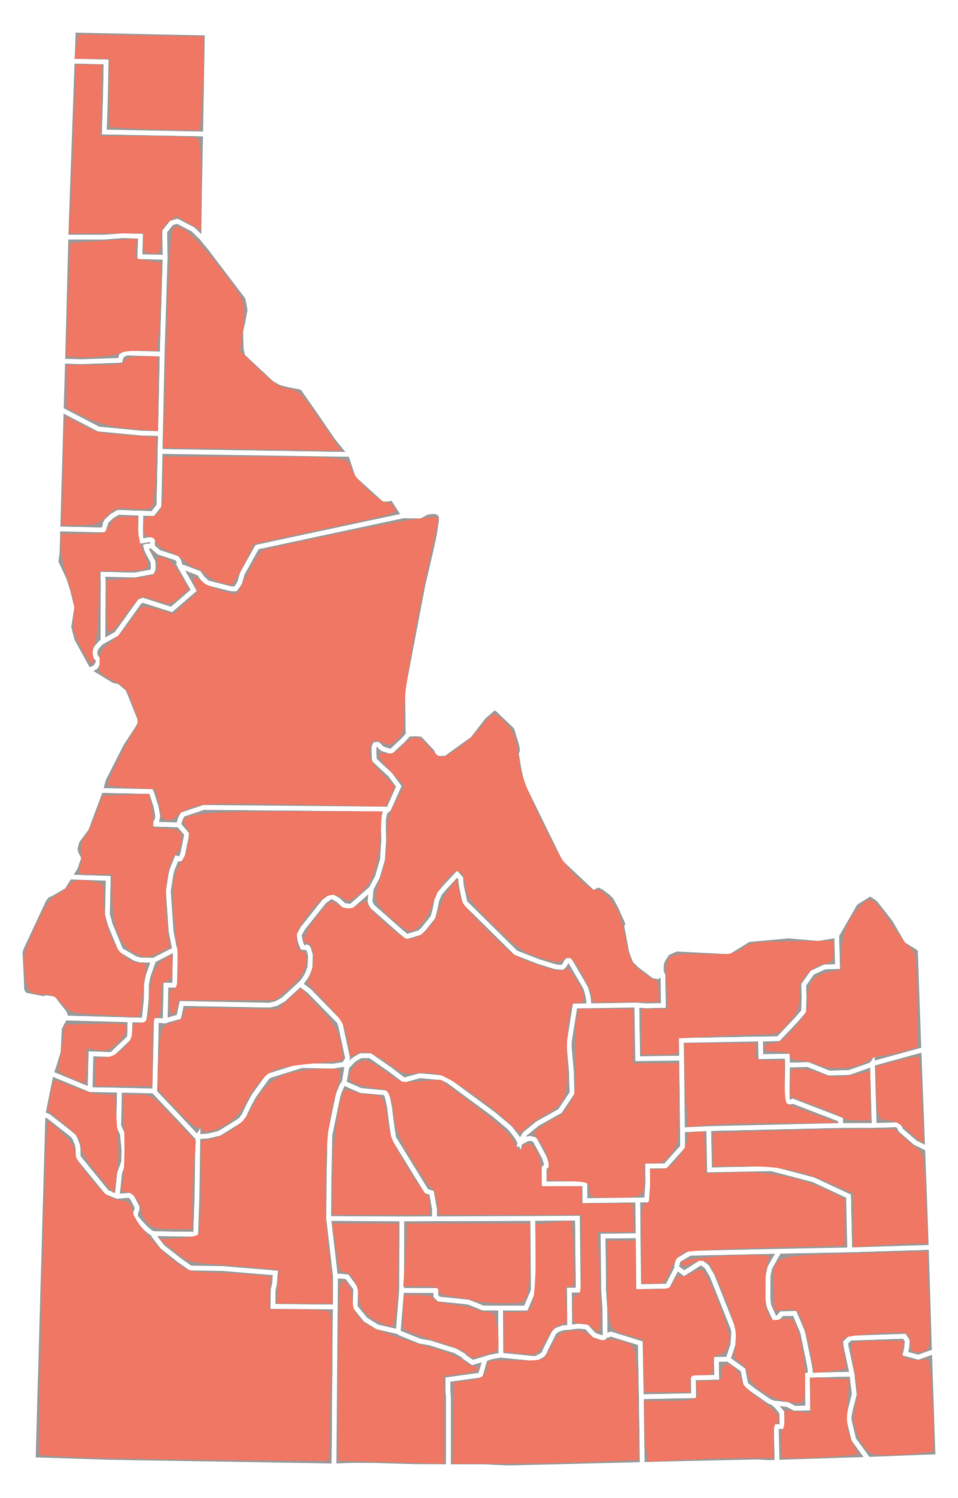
Based on :File:Idaho Senatorial Election Results by County http://www.cbsnews.com/election2010/county.shtml?state=ID&jurisdiction=0∽̱=S